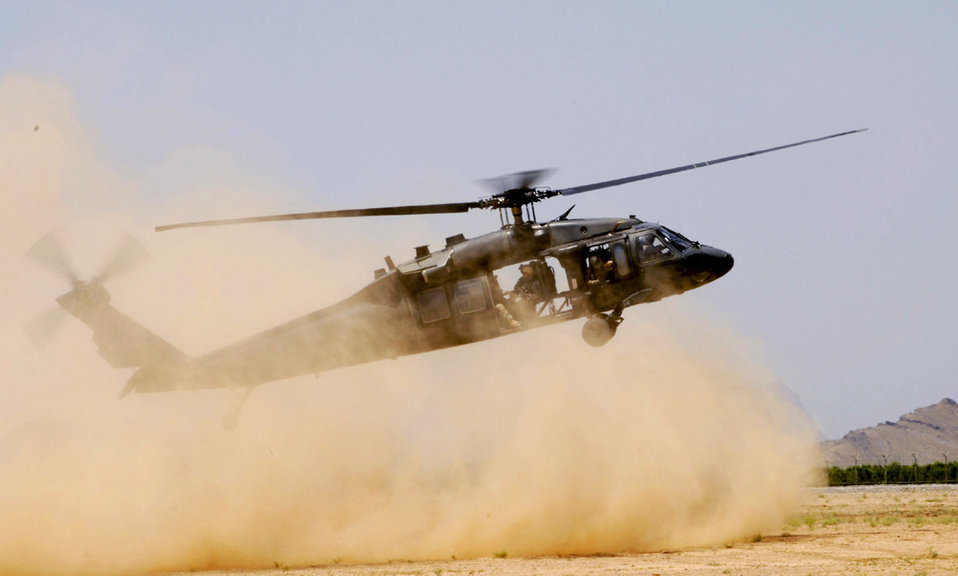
Kandahar Airmen protect servicemembers from IEDs

An Army UH-60 Black Hawk comes in to drop off members of 755th Explosive Ordnance Disposal team and members of the 82nd Airborne Division during a joint training operation in support of Operation Enduring Freedom May 5 at Kandahar Airfield, Afghanistan.